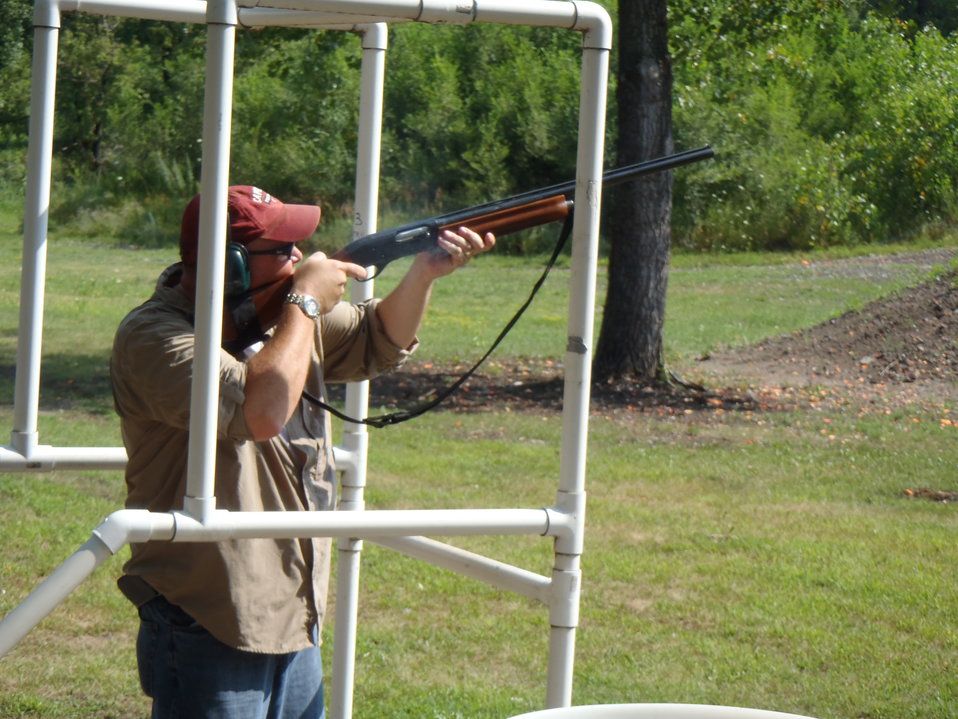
Chuck Traxler takes aim.